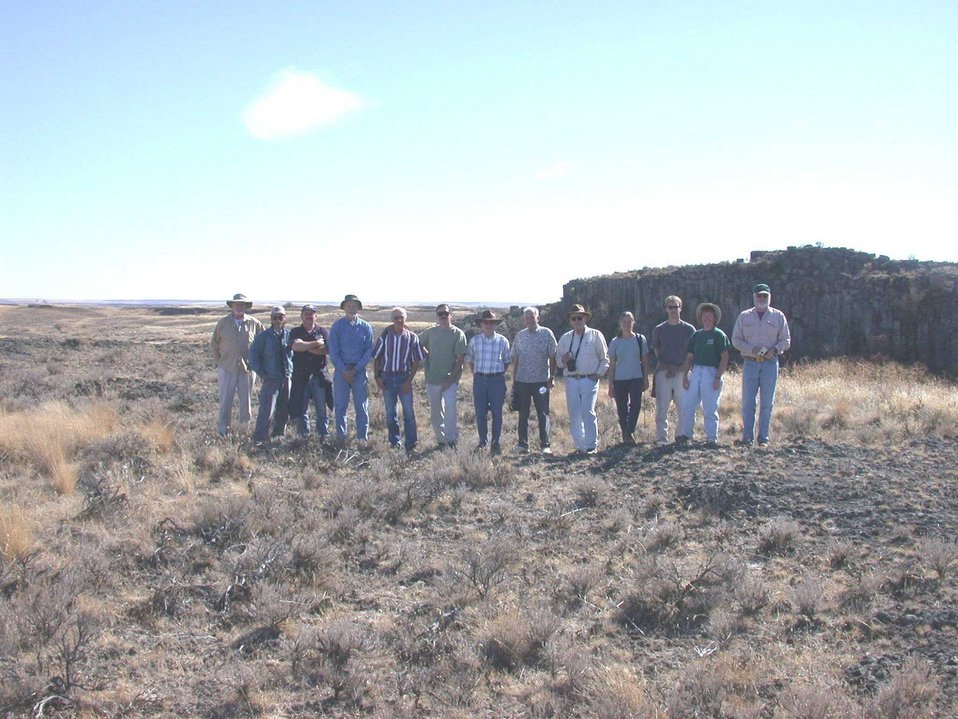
Public Lands Day Sprague geologic tour of columnar basalt ridge in Lake Missourla Flod Channels.